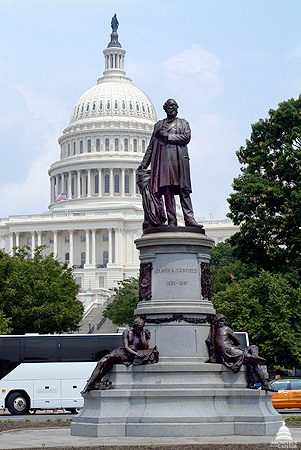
Learn more: Garfield Monument